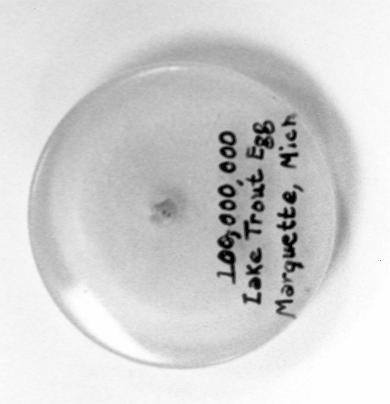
100,000,000 Lake Trout Egg, Marquette